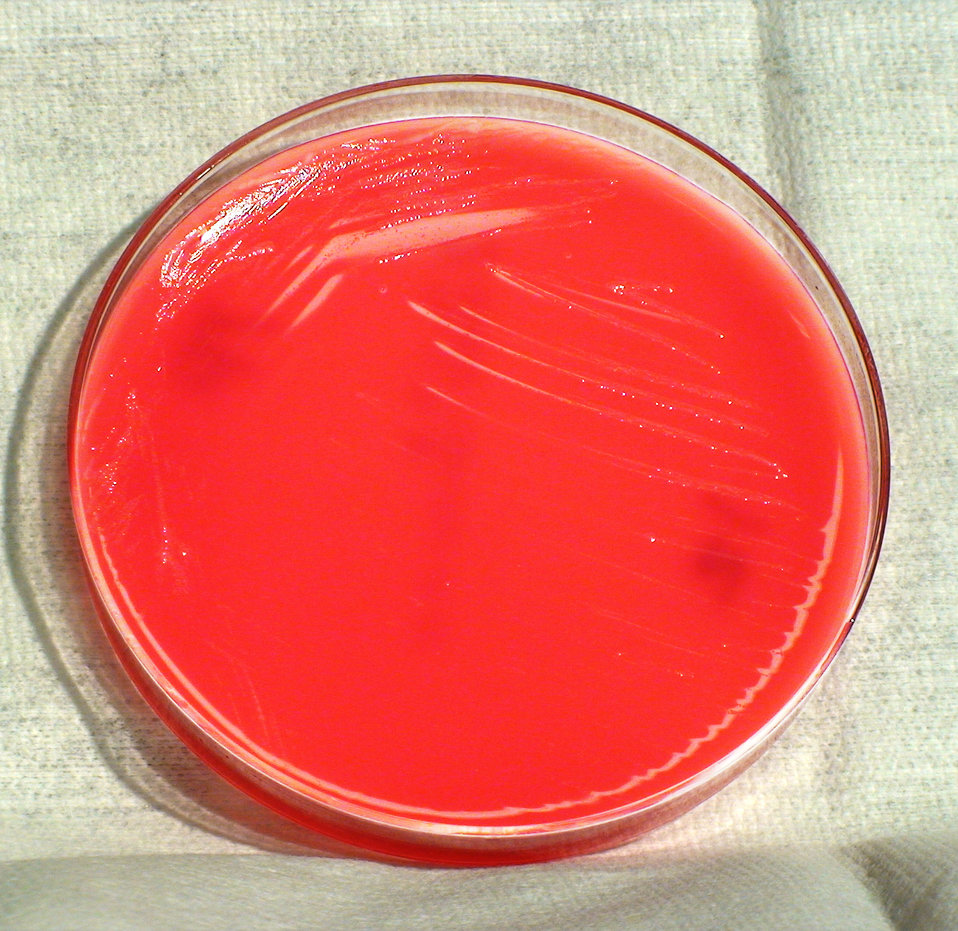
This photograph depicts the colonial morphology displayed by Gram-negative Yersinia pestis bacteria, which was grown on a medium of sheep's blood agar (SBA), for a 24 hour time period, at a temperature of 37�C. Yersinia pestis is pathogenic towards humans, and is responsible for causing the disease known as plague.